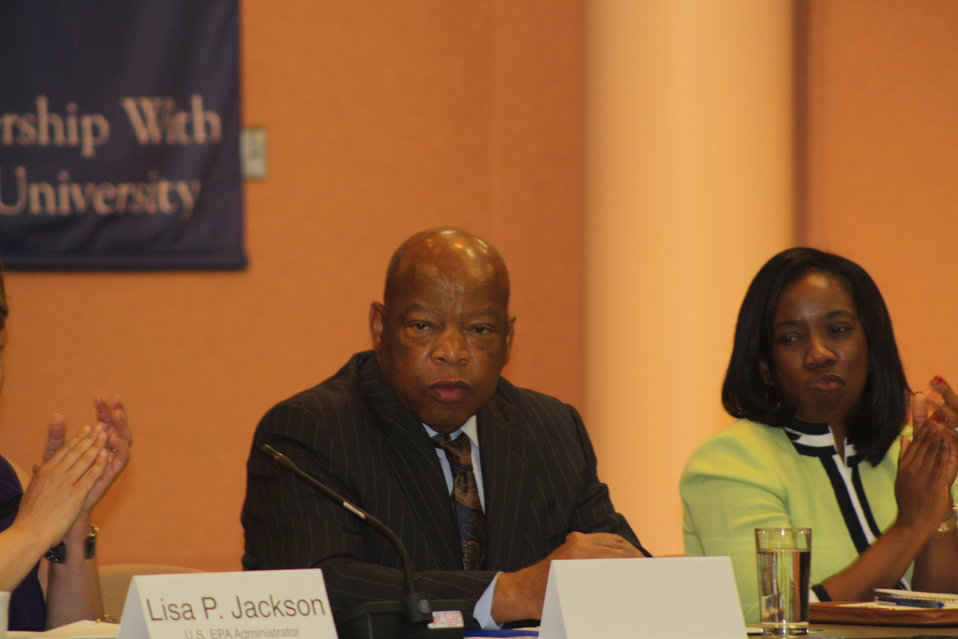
Faith-Based and Neighborhood Partnership launch at Atlanta's Carter Center